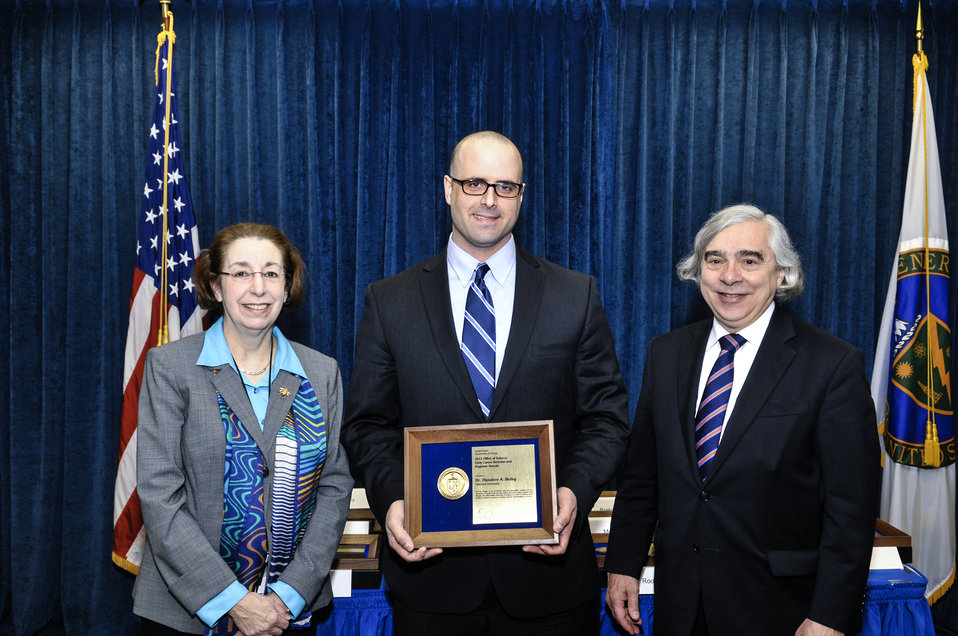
PECASE awards: DOE Secretary E. Moniz with Office of Science Acting Director Pat Dehmer, PECASE Awardee Ted Betley, on April 14, 2014.